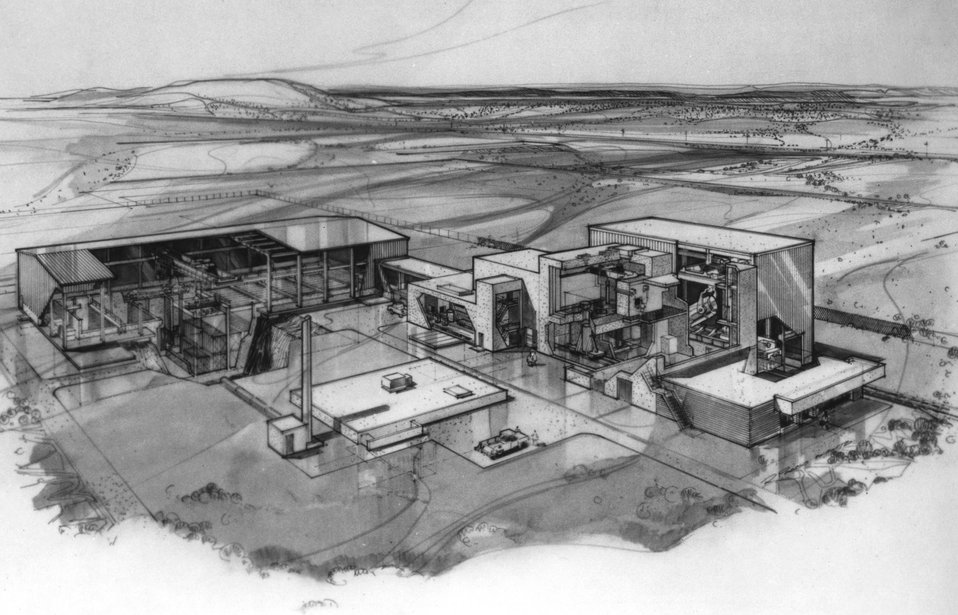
Artist's concept of first module and receiving facilities of a Retrievable Surface Storage Facility the Atomic Energy Commission might build to receive solidified commercial high-level radioactive waste. c. 1973